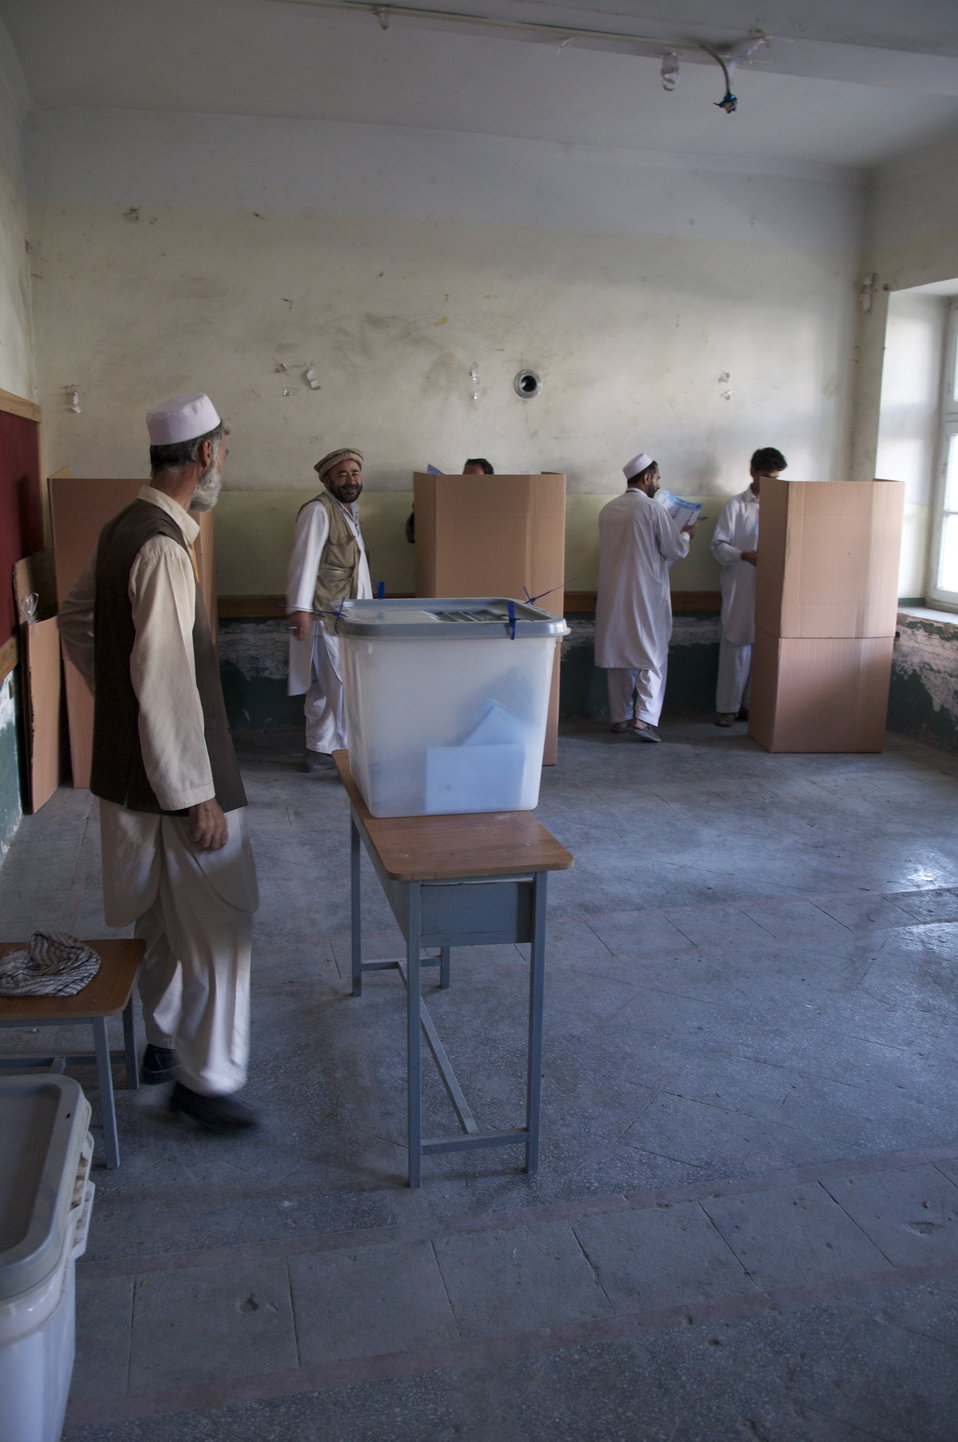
Election Polling Center in Kabul